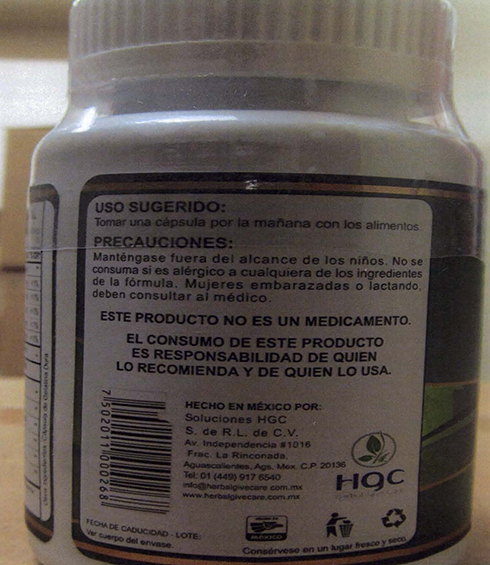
RECALLED – Dietary Supplement

August 16, 2013 – Product Recall – Herbal Give Care LLC Issues Voluntary Nationwide Recall of Esbelder Man Capsules, Esbelder Fem Capsules, and Esbelder Siloutte Capsules Vitamin Supplements Due to Potential Health Risks.